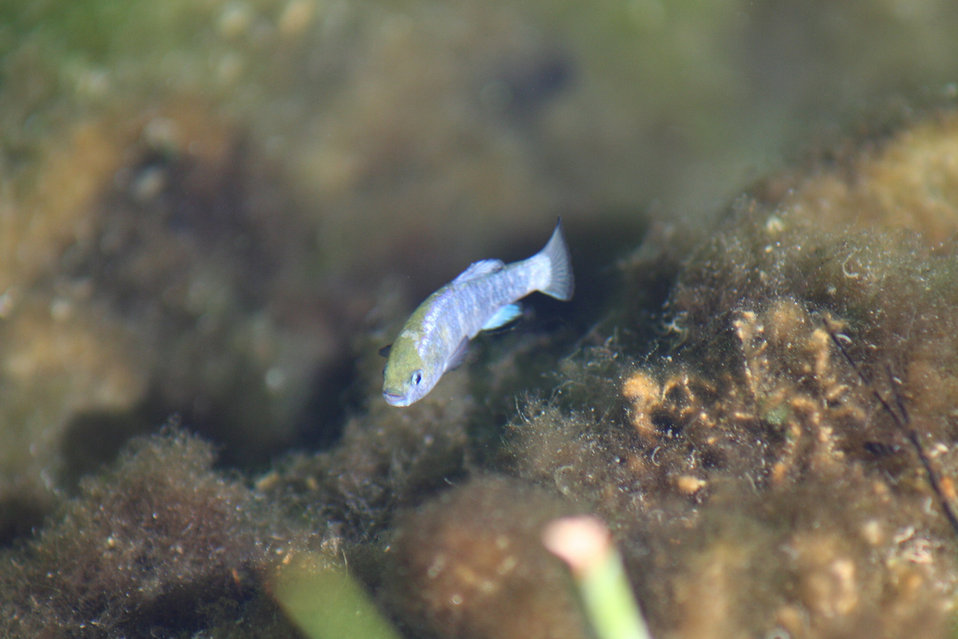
Ash Meadows Amargosa pupfish

endangered
Ash Meadows National Wildlife Refuge, NV